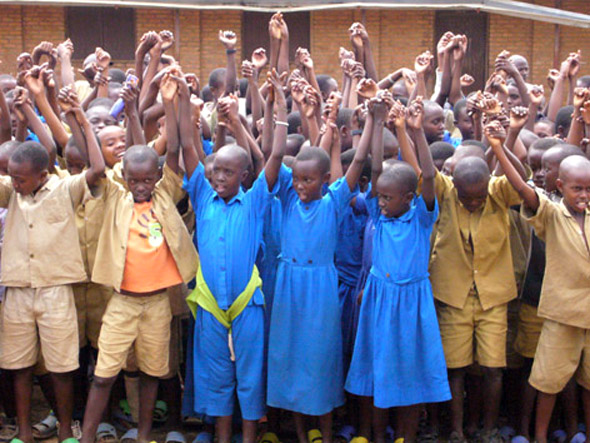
Ramstein Airmen connect with Rwandan children

Students sing in their native Kinya-rwanda to thank Airmen for donations at their school in Kigali, Rwanda. The Airmen are from Ramstein Air Base, Germany.